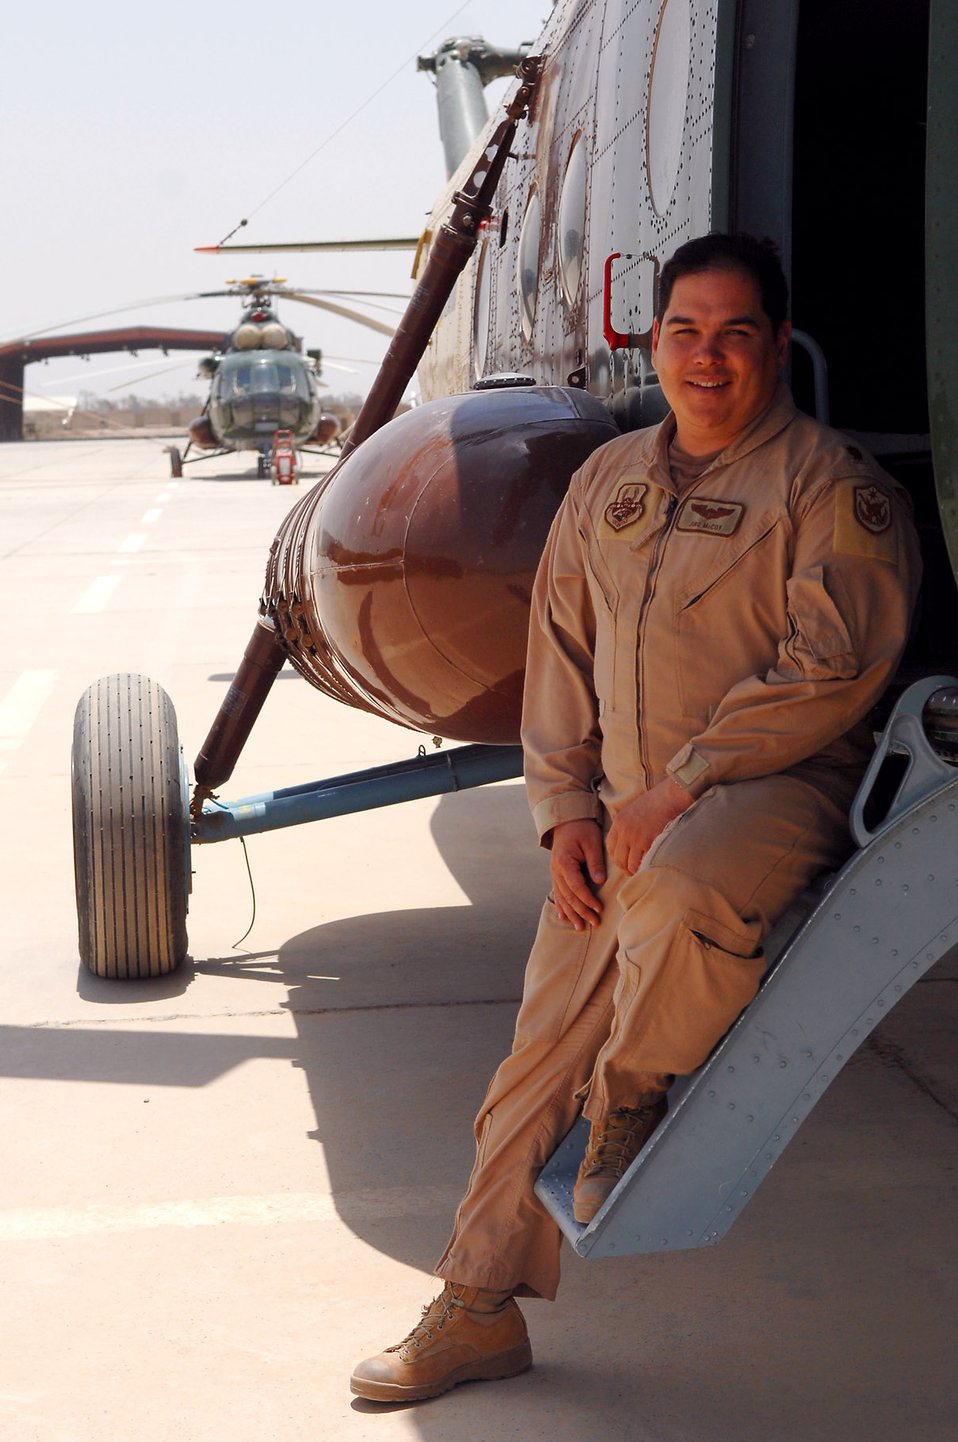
Airman extends twice to complete mission in Iraq

Maj. Jiro McCoy takes a break May 28 on the steps of the helicopter he flew while training Iraqis during his 18-month deployment at Camp Taji, Iraq. Major McCoy voluntarily extended his deployment by 12 months in order to assist the Iraqi air force in the tactical employment of the rotary wing being set up at the camp. Major McCoy is the 770th Air Expeditionary Advisory Squadron Mi-17 (multi-role helicopter) commander of advisers. The major deployed from Fort Rucker, Ala.